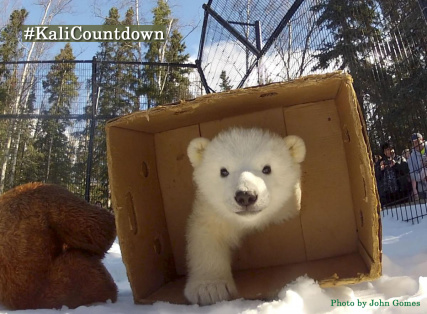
Photo of the Week - Kali (NY)

Photo of the Week - May 13, 2013

An Alaskan polar bear named Kali is on his way to the Buffalo Zoo this week.